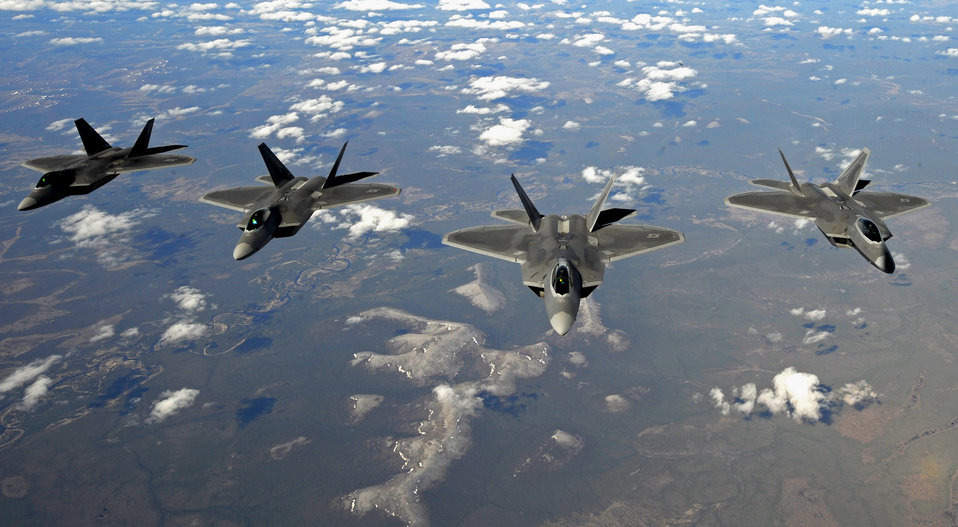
Fighters refuel over Alaska

F-22 Raptors from Elmendorf Air Force Base, Alaska, fly over Alaska May 26, 2010.